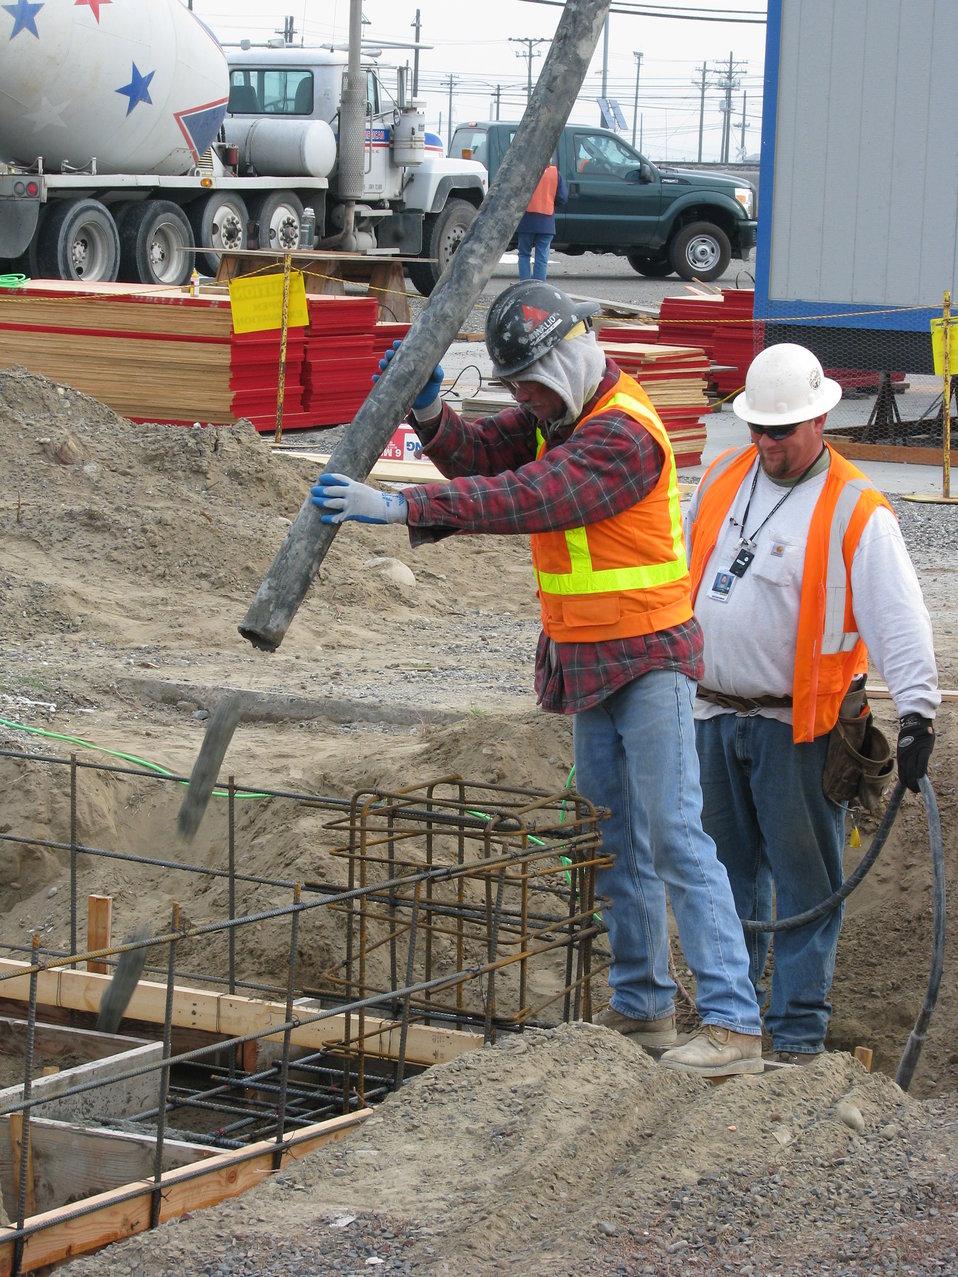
218-A concrete pour

Workers place concrete footings for a new 10,000-square-foot storage facility being built at Hanford. The Recovery Act-funded building will provide a centralized storage area for materials currently being housed in other site facilities, providing a safer and more efficient distribution system to support Hanford maintenance and operations activities.